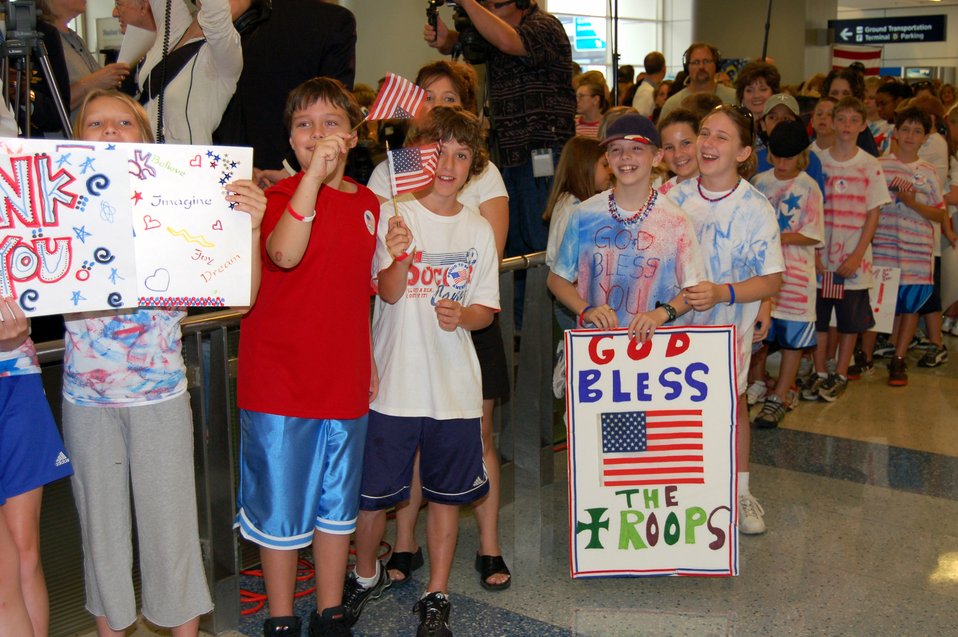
Air Mobility Command reaches milestone in 'R and R' flight ops

Children smile and wave U.S. flags as U.S. servicemembers prepare to pass through a greeting line of more than 400 people waiting to greet them June 12 at Dallas-Fort Worth International Airport.